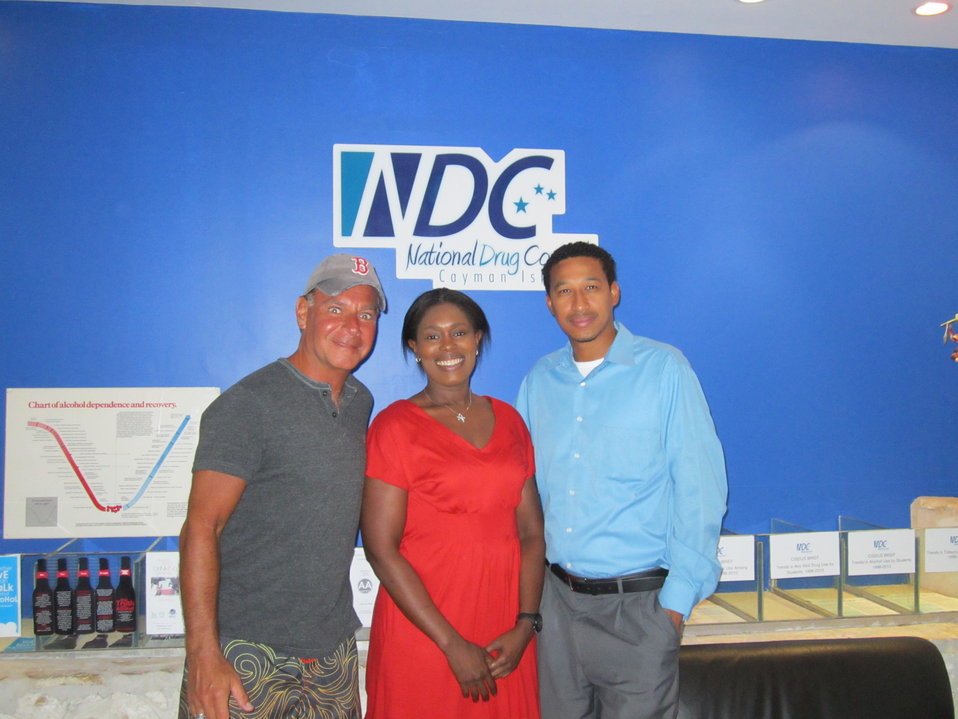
NIDA and NDFW in the Cayman Islands

Cayman Islands, while on holiday, NIDA's own Brian Marquis paid a visit to the National Drug Council Cayman Islands. Joan West-Dacres, Exec Director and Simon Miller, Prevention Officer.